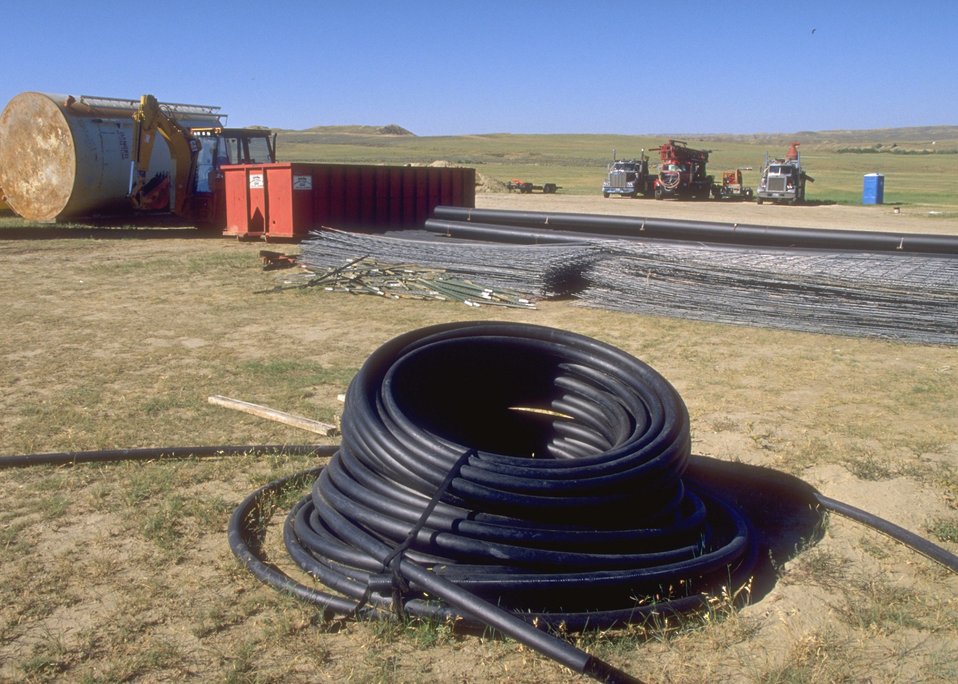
Temporary storage area for coal bed methane development, Buffalo Field Office.